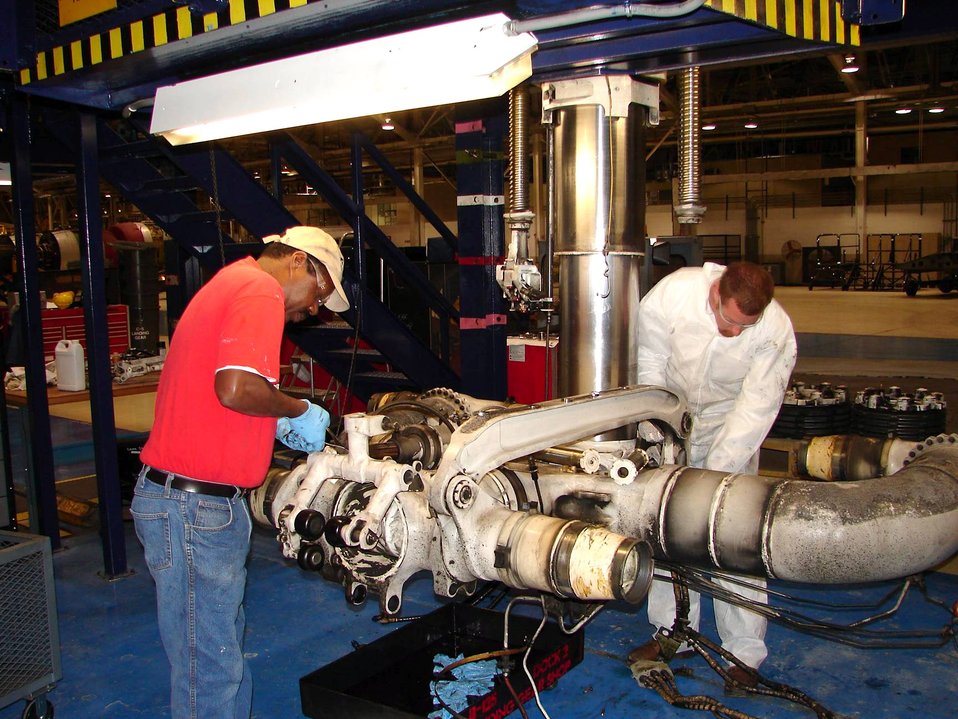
Streamlining maintenance operations

Monroe Allen (left) and Jessie Walker tear down a C-5 Galaxy main landing gear at Robins Air Force Base, Ga. The Warner Robins Air Logistics Center received the 2006 Franz Edelman Award for Achievement in Operations Research on Monday, May 1, 2006, for its use of operations research to streamline maintenance procedures for the C-5. Using innovative management processes, the time required to repair and overhaul the aircraft was reduced 33 percent. Mr. Allen and Mr. Walker work in the center's C-5 landing gear shop